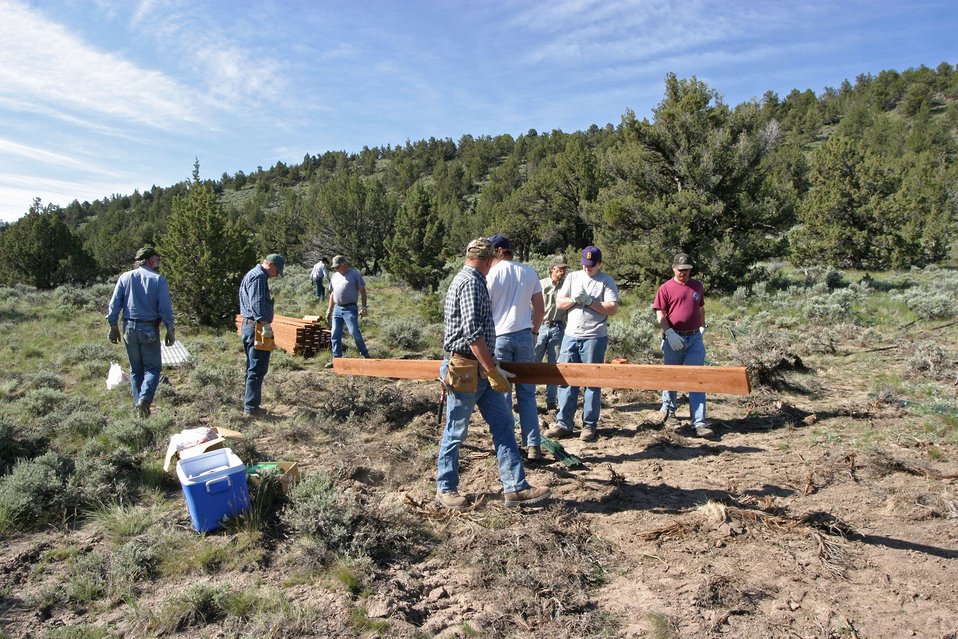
Volunteers help BLM build guzzlers to provide water for wildlife.